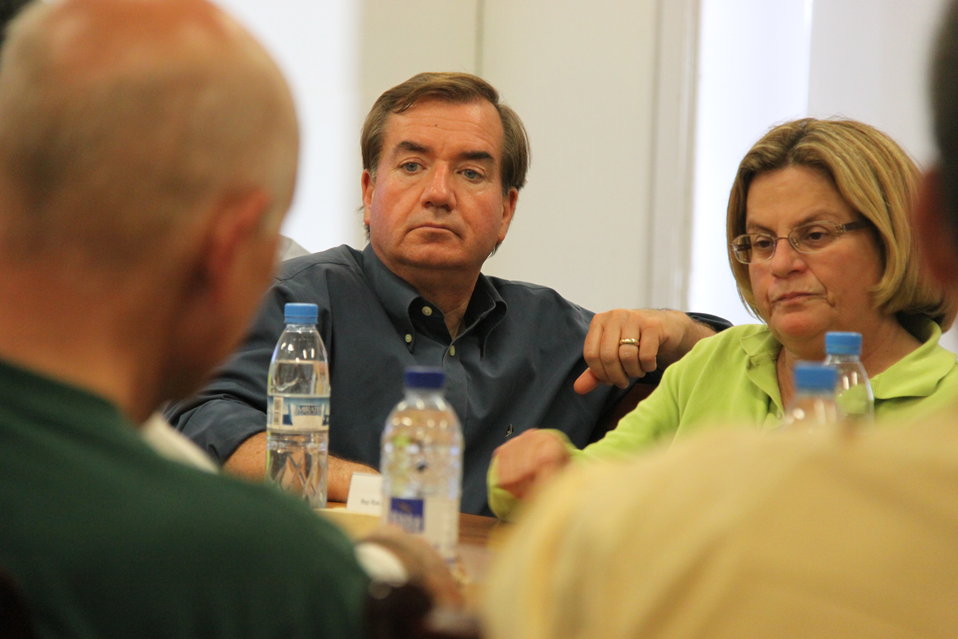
Meeting with Local Leaders in Kandahar